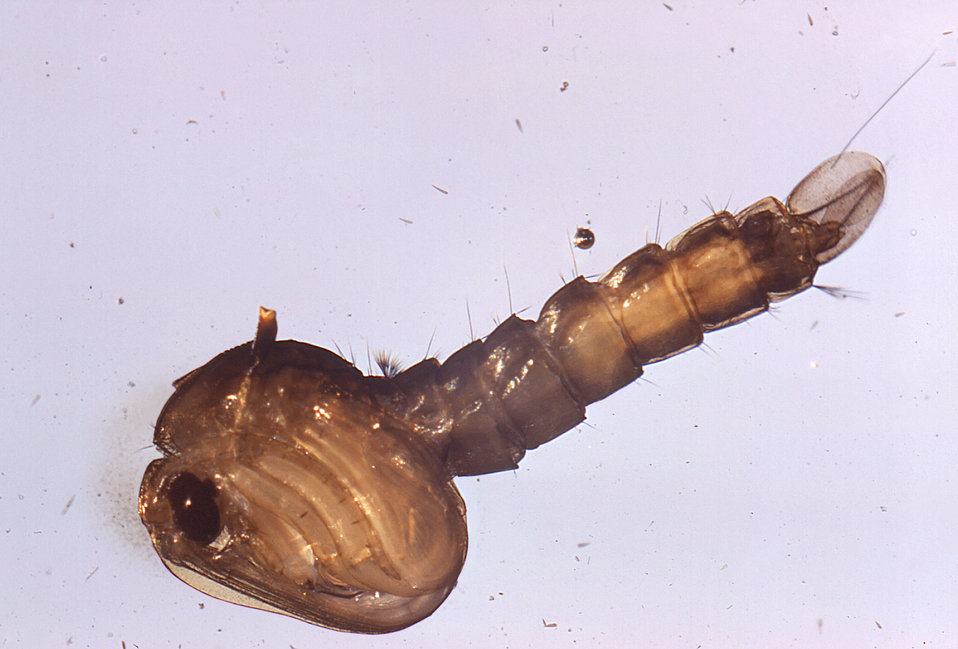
This is an enlarged view of an Aedes triseriatus mosquito pupa. The A. triseriatus mosquito is known as one of the many arthropodal vectors responsible for spreading the arboviral encephalitis, West Nile virus (WNV) to human beings through their bite when obtaining a blood meal.